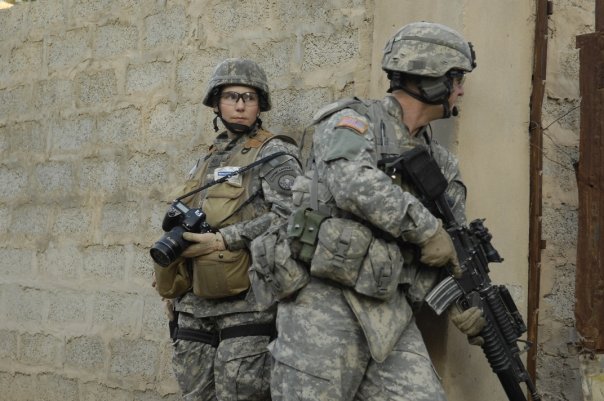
Air Force combat camera team discusses role of media in military

Staff Sgt. Stacy Pearsall, shown here documenting events in Iraq in 2006, is an aerial combat photojournalist assigned to the 1st Combat Camera Squadron from Charleston Air Force Base, S.C.